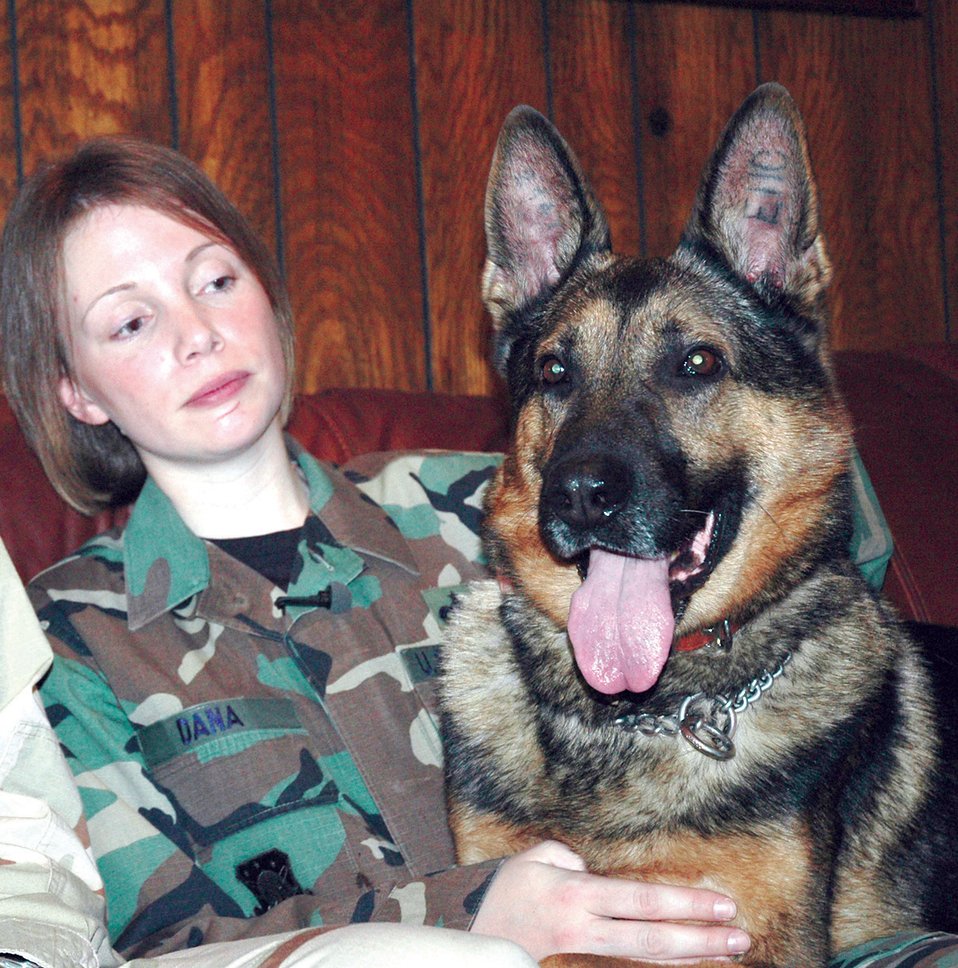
Rex the Dog

PETERSON AIR FORCE BASE, Colo. (AFPN) -- Tech. Sgt. Jamie Dana sits with her military working dog, Rex during a Dec. 1interview with NBC news. Sergeant Dana is the first military working dog handler to adopt her working dog from active-duty service thanks to a new defense appropriations bill. Sergeant Dana is a military working dog handler with the 21st Security Forces Squadron.